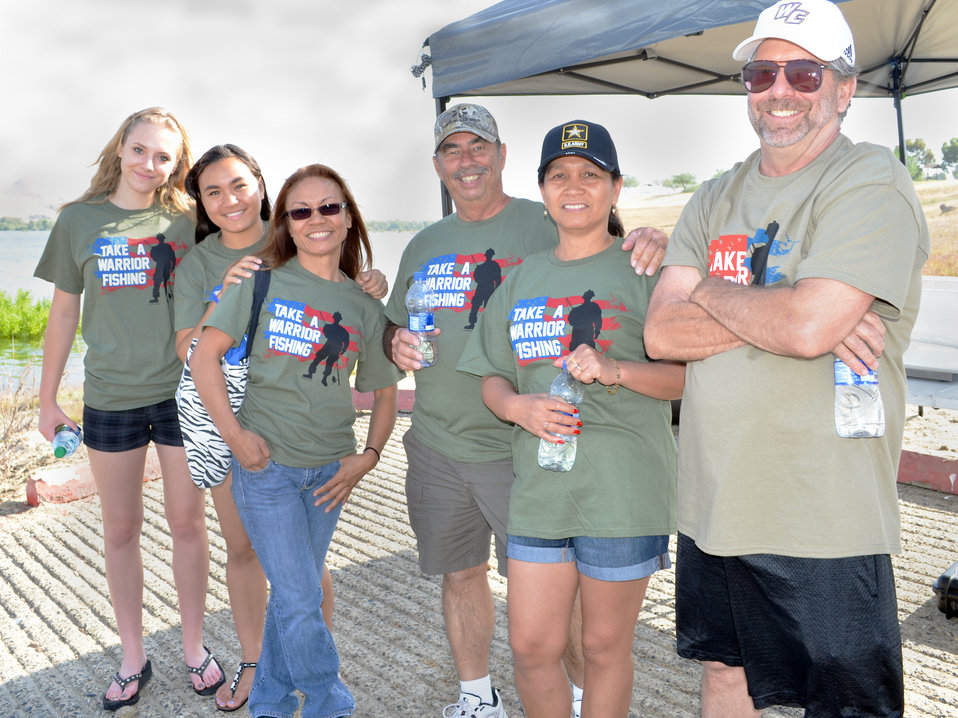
Volunteer smiles (“Take a Warrior Fishing” event at Success Lake)

More than 20 volunteers from the Walmart distribution center in Porterville, Calif., assisted wounded warriors and their families who were enjoying a day of fishing during the 'Take a Warrior Fishing' event at Success Lake, located near Porterville, Calif., May 4, 2013. This is the second year the U.S. Army Corps of Engineers Sacramento District has hosted the event. Photo cropped for emphasis.